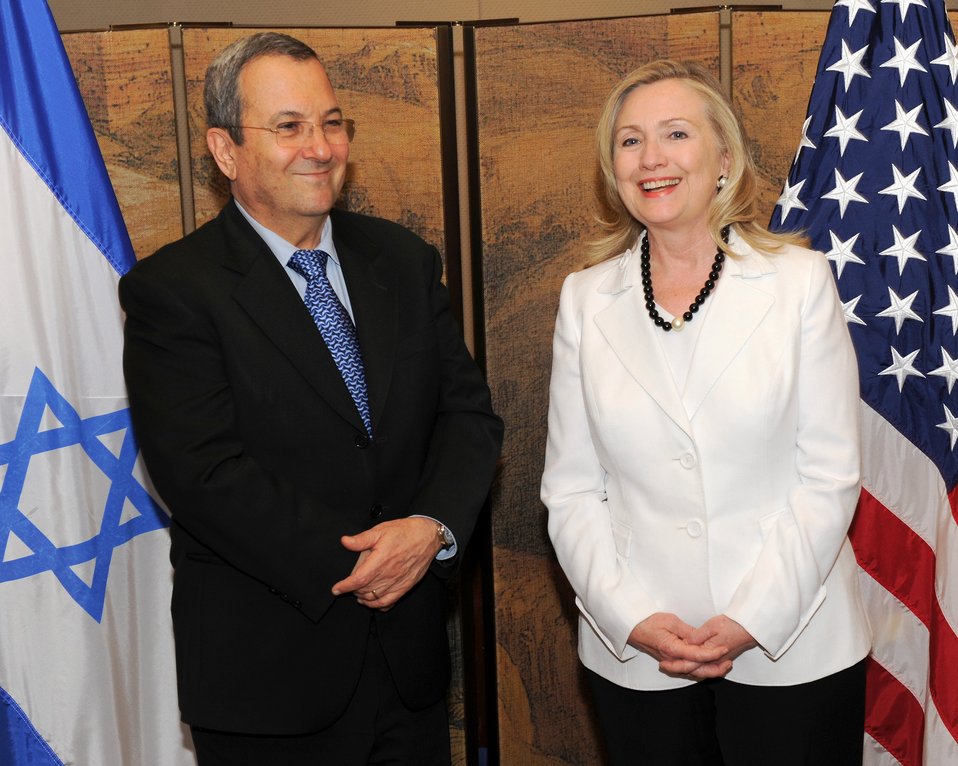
Secretary Clinton Meets With Israeli Defense Minister Barak

U.S. Secretary of State Hillary Rodham Clinton meets with Israeli Defense Minister Ehud Barak in Jerusalem on July 16, 2012.